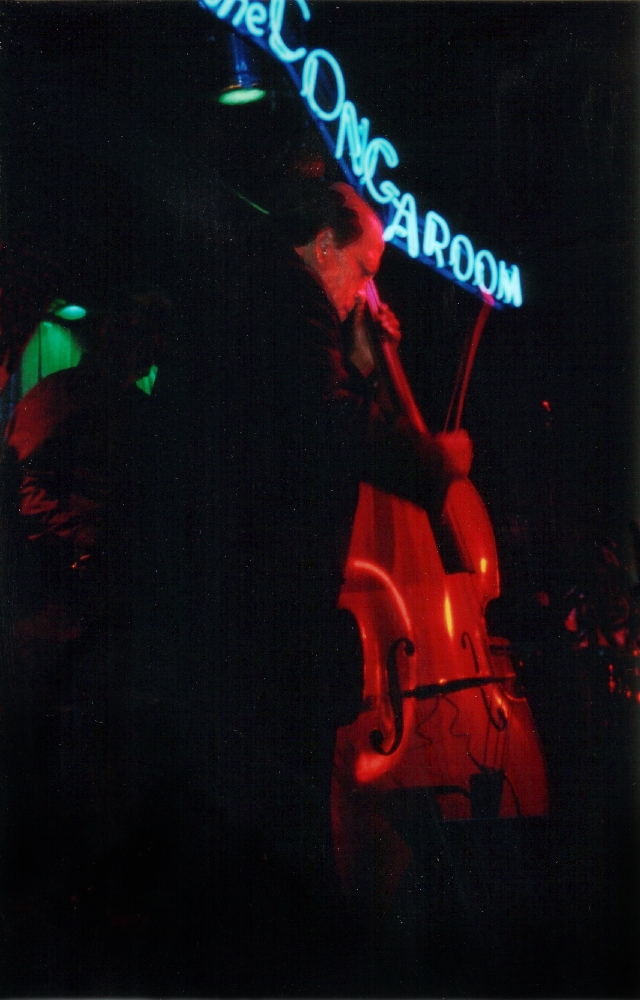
Personal Picture of bassist Cachao taken by contributor Migdiachinea